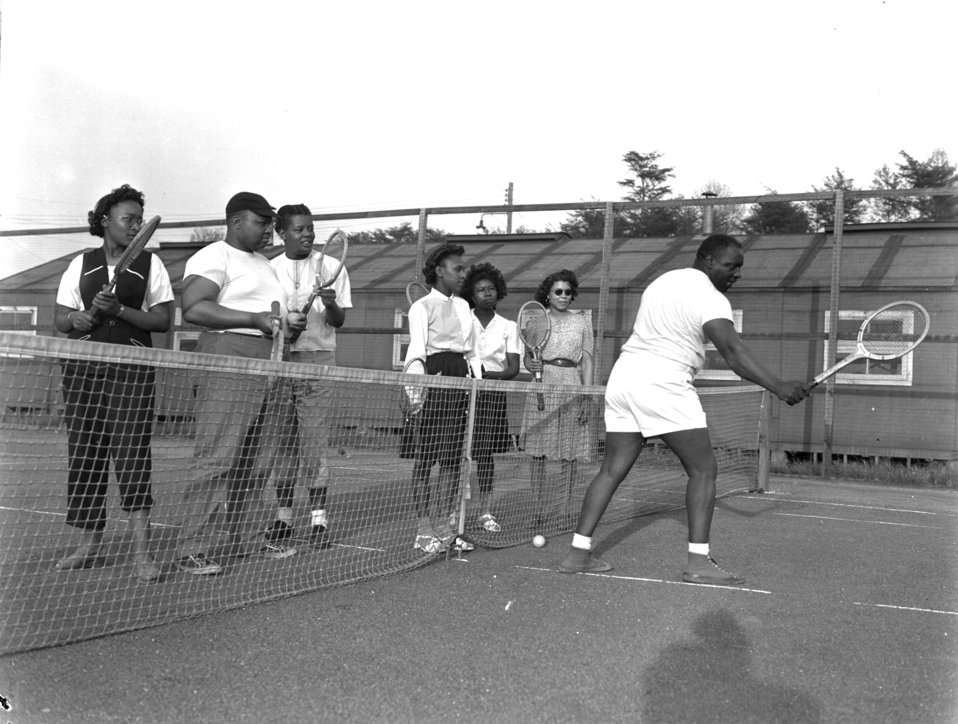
Tennis Class Oak Ridge

3425-1 DOE photo by Ed Westcott

Tennis ClassesOak Ridge Tennessee 4-1947